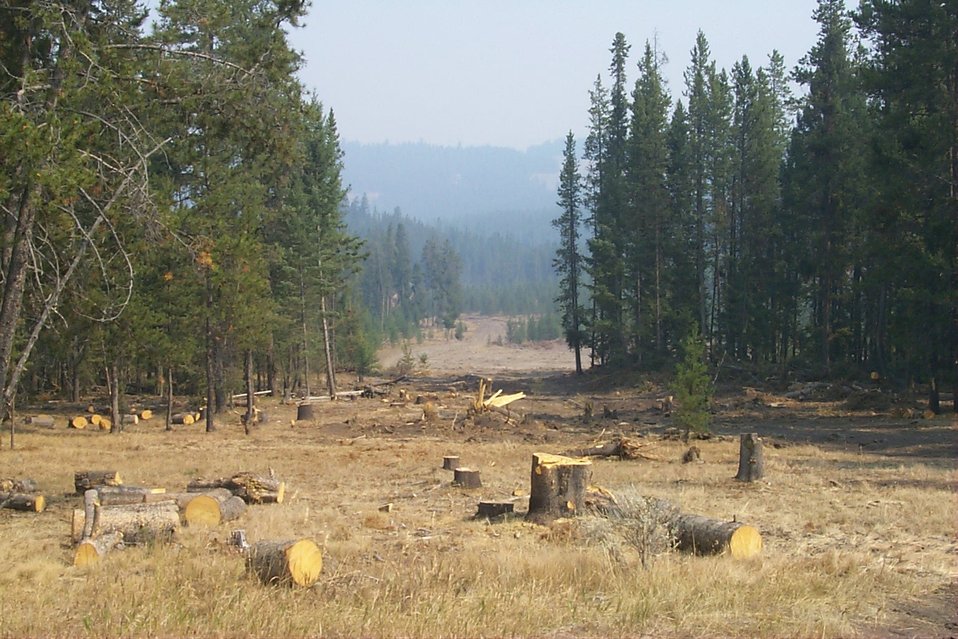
Fire Clearwater Fire Salmon Field Office USRD Upper Snake River District